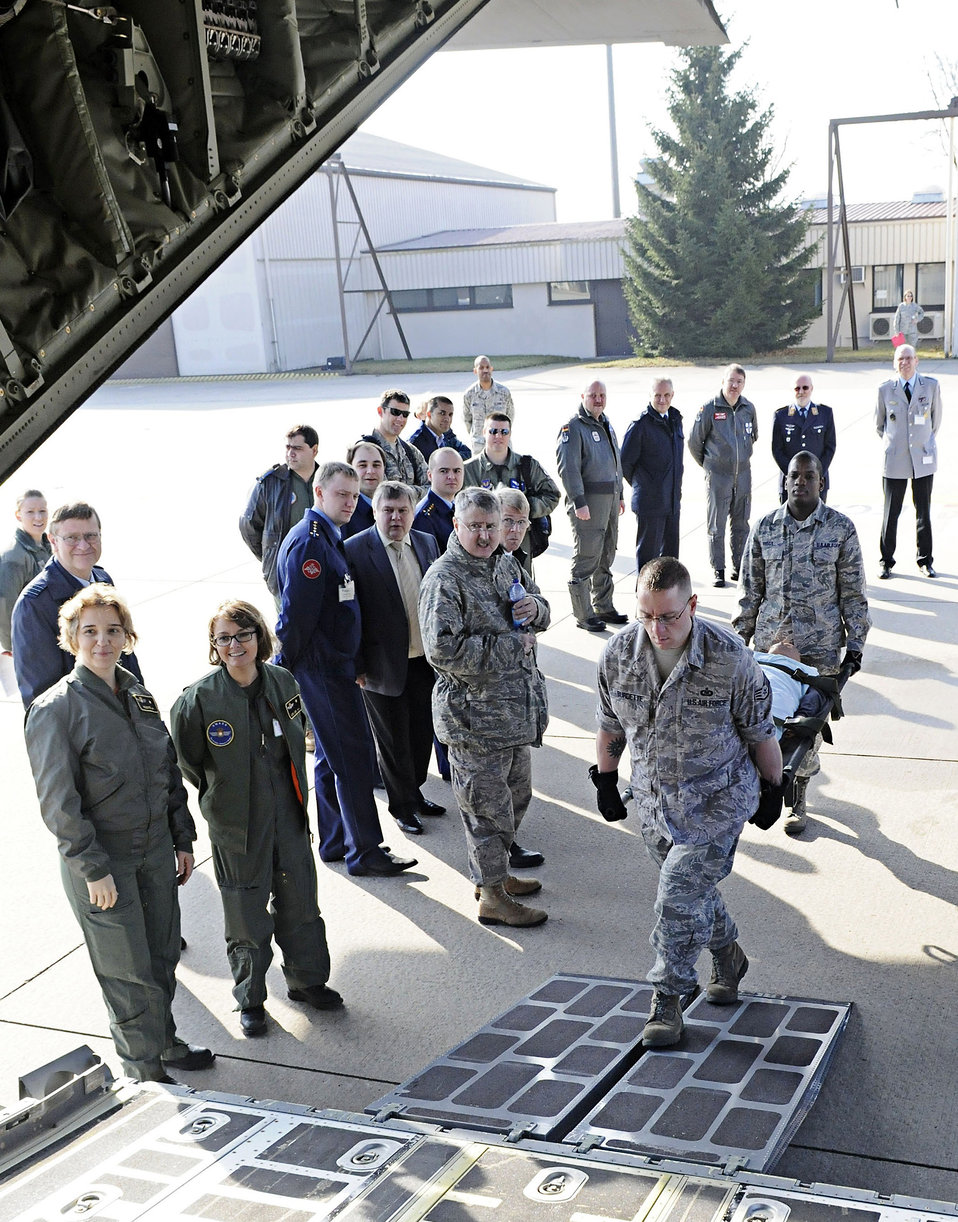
NATO, USAFE host international flight surgeons

Airmen from the 86th Aeromedical Evacuation Squadron personnel demonstrate procedures for loading critical-patients March 15, 2011, at Ramstein Air Base, Germany, during the 2011 European Flight Surgeons Conference. The focus of the conference is to build partnerships and develop advancements in aeromedical evacuation and critical-care air transport.